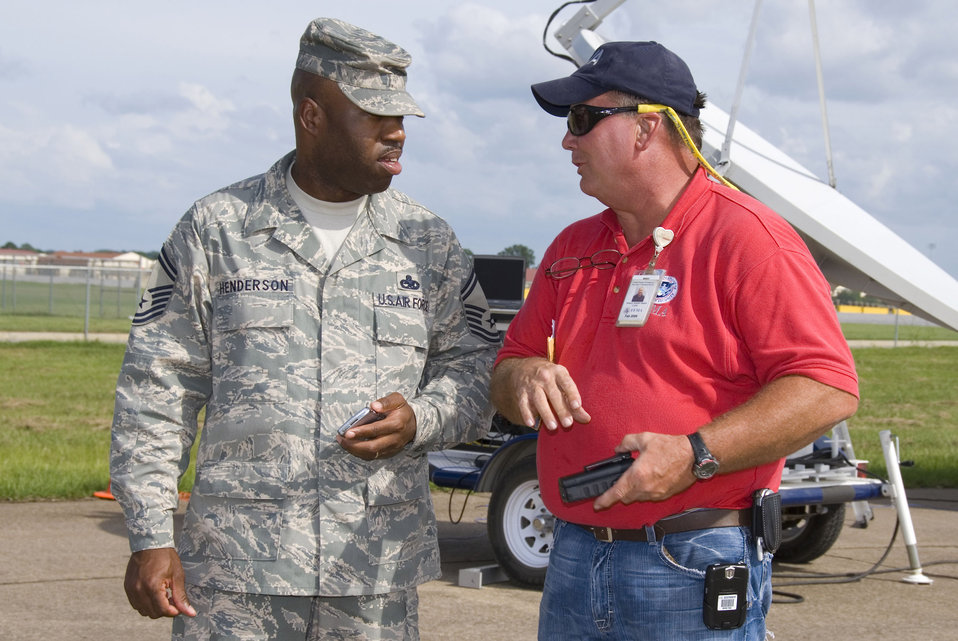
Maxwell officials provide shelter for Gustav evacuees

Senior Master Sgt. Terence Henderson, the Maxwell Air Force Base, Ala., Federal Emergency Management Agency liaison, talks with Ronnie Banes, a FEMA site manager, about staging efforts on the base flightline.